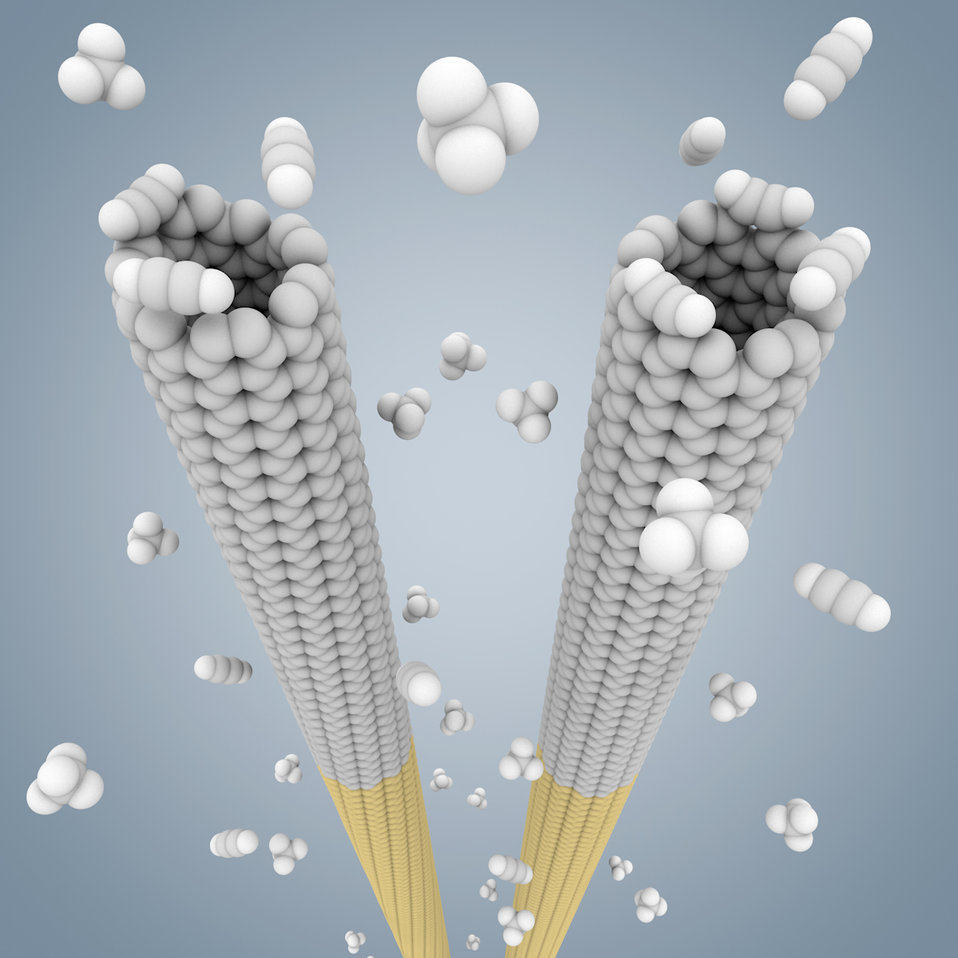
Nanotubes

Cloning nanotubes: In this computer model, small, pre-selected nanotube 'seeds' (yellow) are grown to long nanotubes of the same twist or 'chirality' in a high-temperature gas of small carbon compounds.